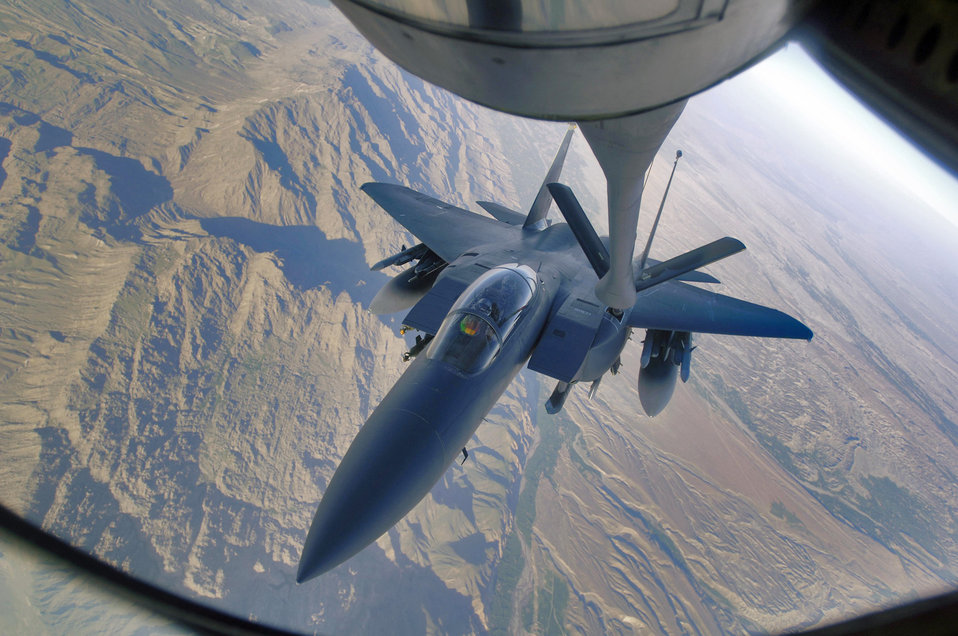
July 30 airpower summary: F-15Es eliminate IEDs

An F-15E Strike Eagle refuels over the mountains of Afghanistan. The F-15E provides close-air support and armed aerial overwatch to deter enemy activities.